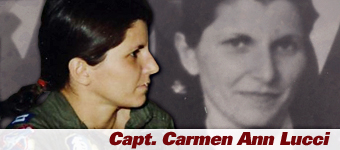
Capt. Carmen Lucci

Carmen Lucci was the first female flight-test engineer to lose her life either as a student or a graduate of any of the four formal test-pilot schools -- U.S. Air Force, U.S. Navy, British Empire Test Pilot School and the French Test Pilot School.